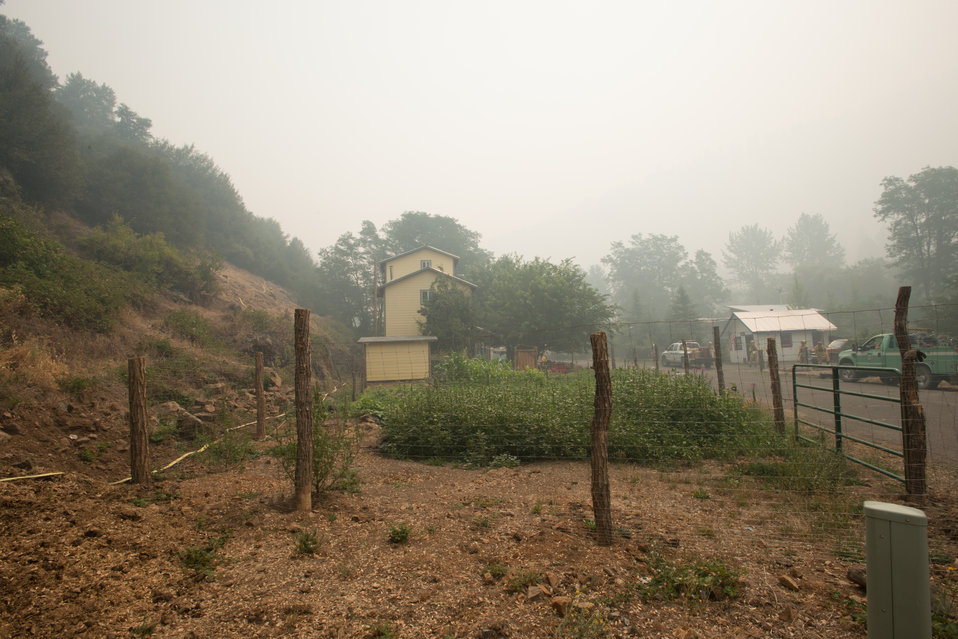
Engine Crews have prepositioned fire hoses to either run sprinklers that spray water on structures and surrounding areas, or to provide initial attack on small fires that may start in Sawyers Bar, CA, during the Salmon River Complex Fire, northwest of Sawyers Bar and west of Etna and Yreka, CA in the Klamath National Forest, on Wednesday, Aug. 6, 2013.